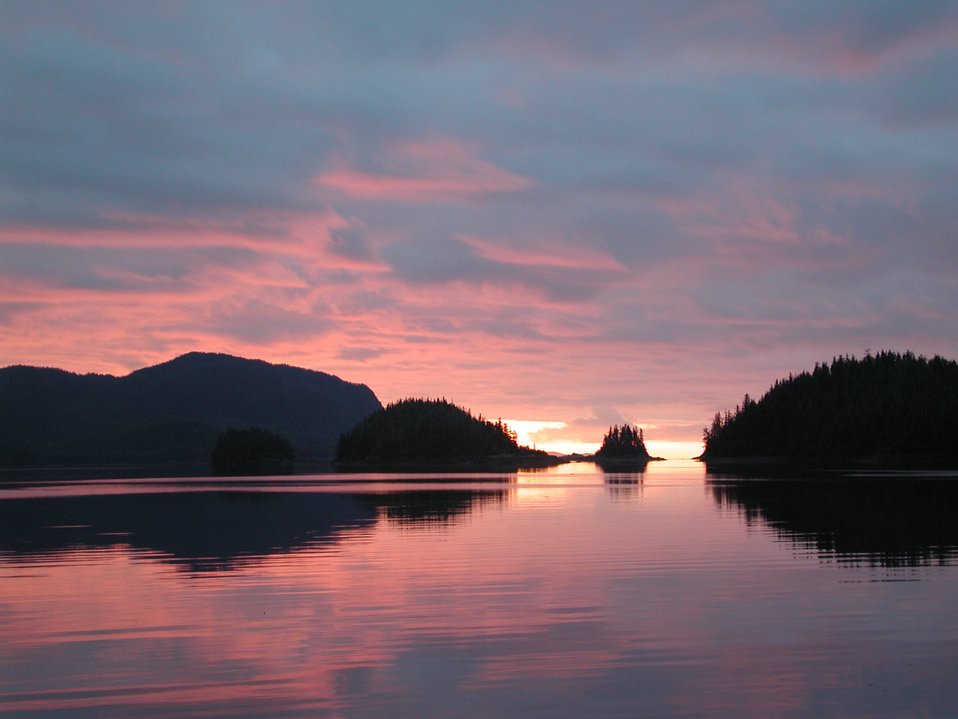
A magnificent sunset at the Bay of Isles